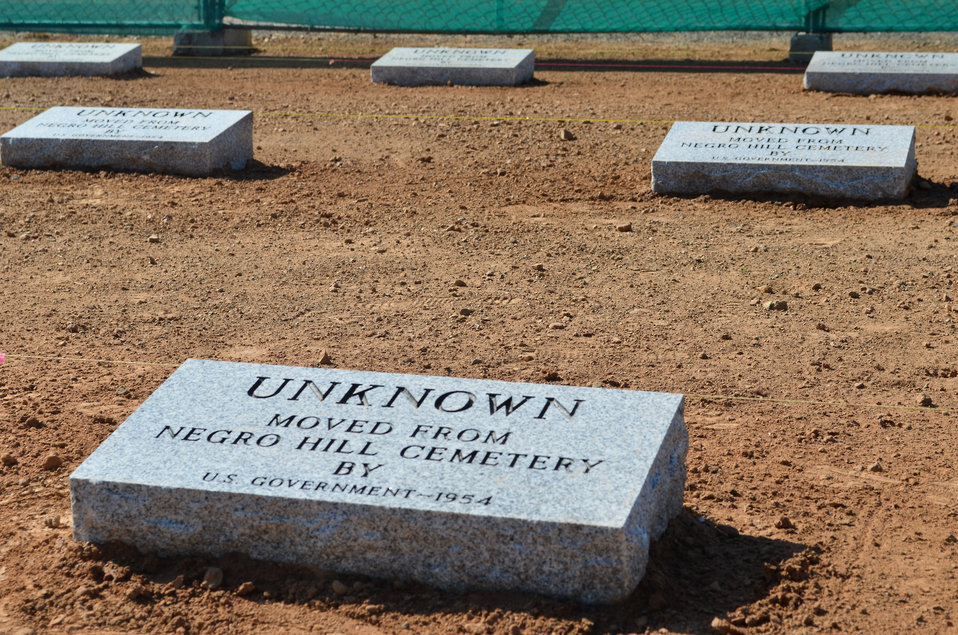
Replacing offensive grave markers at Mormon Island Relocation Cemetery

New grave markers at Mormon Island Relocation Cemetery in El Dorado Hills, Calif., shown Oct. 19, 2011, replace original markers for graves moved from Negro Hill Cemetery that contained an offensive racial epithet. The U.S. Army Corps of Engineers Sacramento District moved the 36 graves from the original Negro Hill Cemetery to the relocation cemetery during the construction of Folsom Dam in 1954, and created the offensive markers. El Dorado County, which manages the cemetery, and the California Prison Industry Authority collaborated on the project to replace the markers.